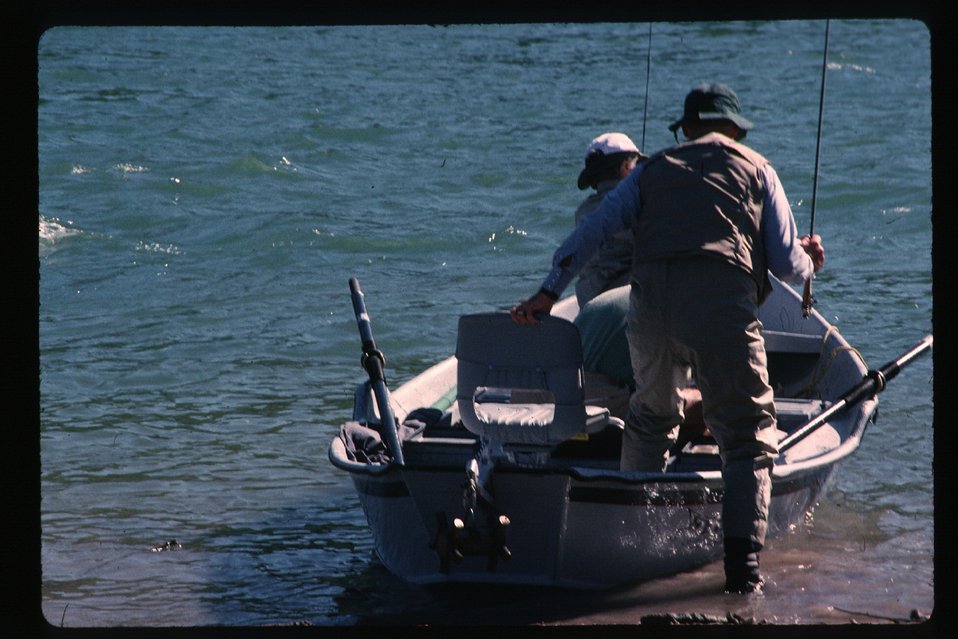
Fly fishing South Fork of Snake River Idaho Falls Field Office USRD Upper Snake River District